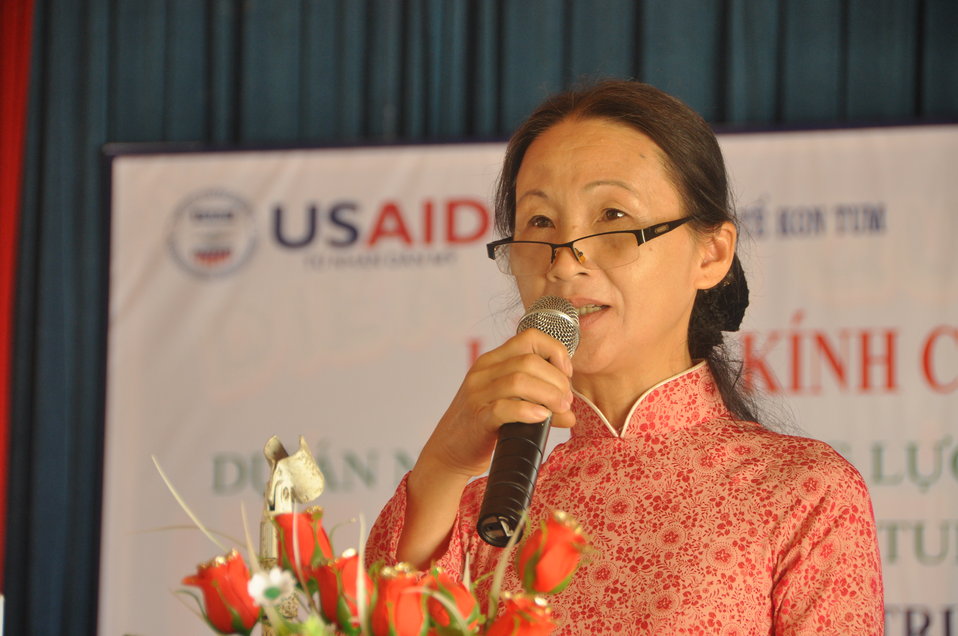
School children in Dak To, Kon Tum Province, receive eyeglasses under a program supported by USAID and partners HKI and World Leraning